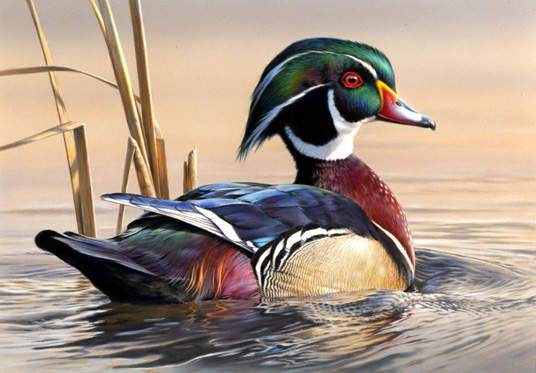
Duck Stamp - Winner, 2011

Minnesota Artist Joseph Hautman won the 2011 Federal Duck Stamp Contest. This was his 4th win. He also won in 1991, 2001 and 2007. This stamp went on sale in June, 2012.